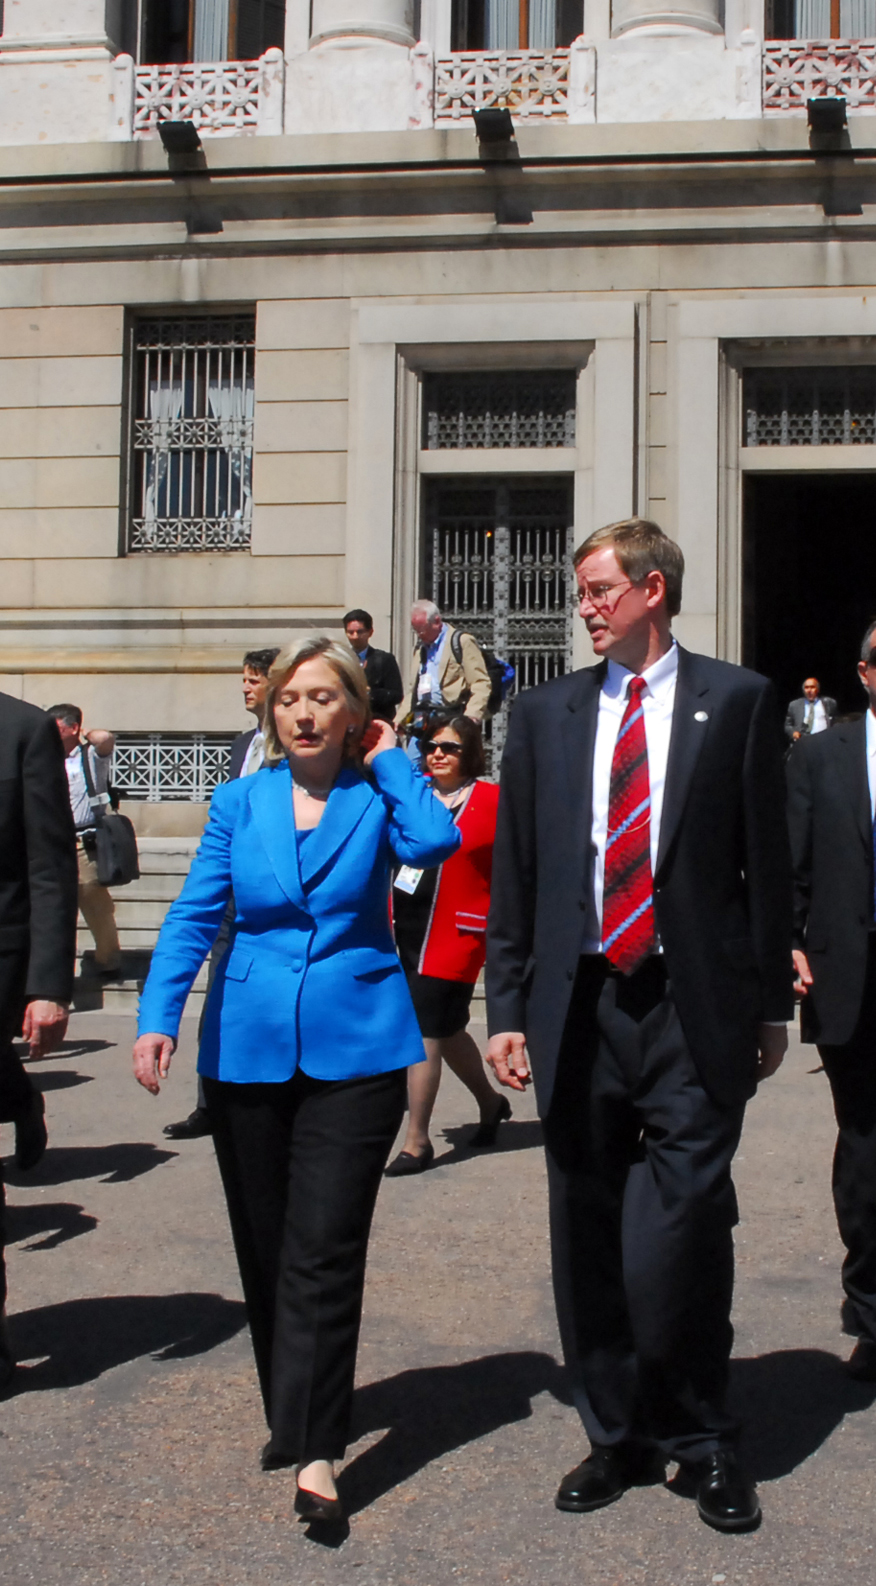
Secretary Clinton Meets With Uruguay President-Elect

U.S. Secretary of State Hillary Rodham Clinton and U.S. Ambassador to Uruguay David Nelson leave the Legislative Palace after meeting with President Elect José Mujica in Montevideo, Uruguay March 1, 2010.